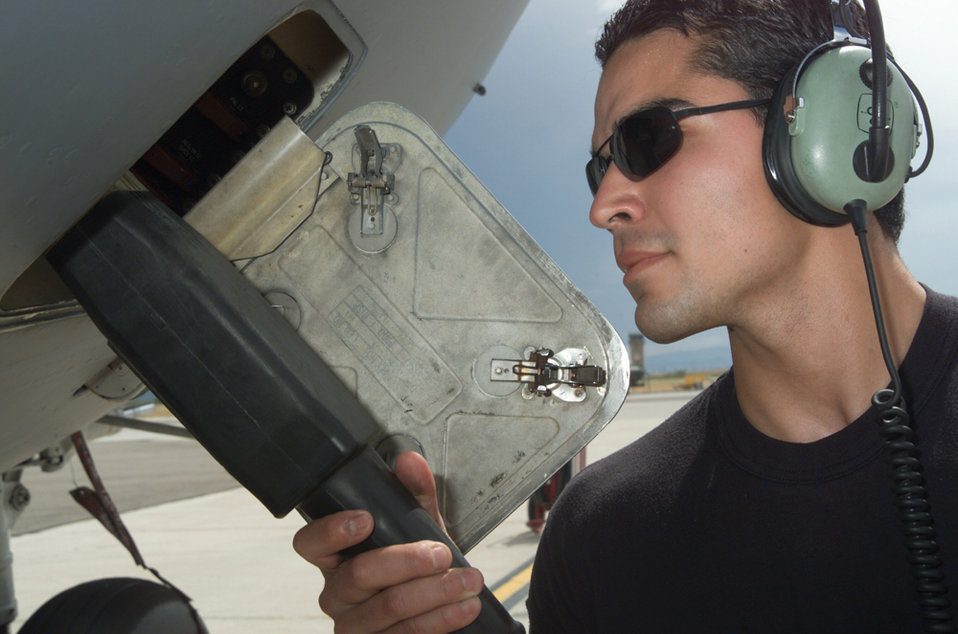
We've got power

DAVIS-MONTHAN AIR FORCE BASE, Ariz. - Airman 1st Class Luis Robles attaches a battery to a C-17 Globemaster III here Aug. 13. Airman Robles is assigned to the 437th Aircraft Maintenance Squadron at Charleston Air Force Base, S.C.